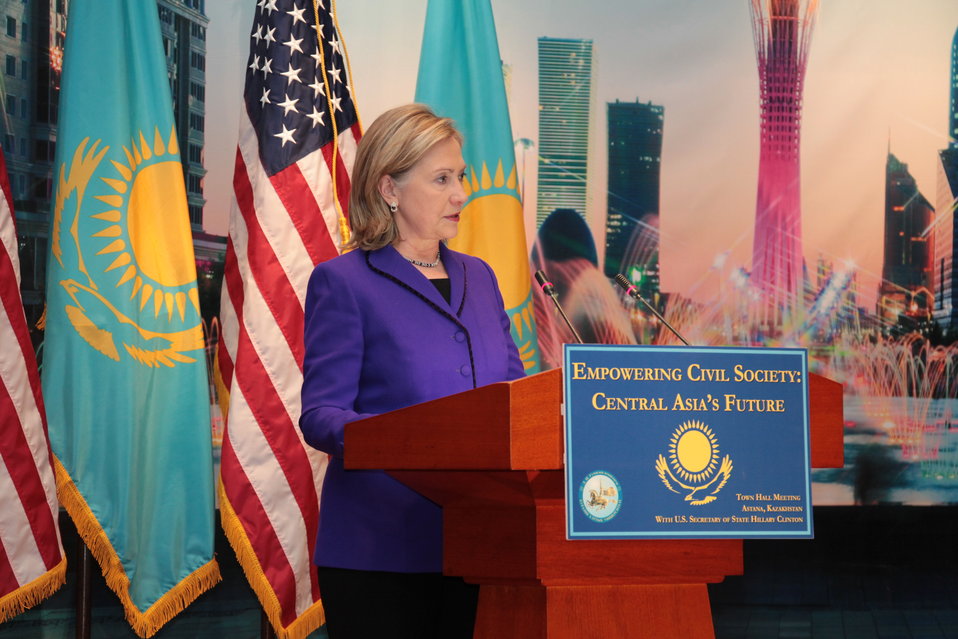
Secretary Clinton Responds to a Question

U.S. Secretary of State Hillary Rodham Clinton responds to a question at a town hall on “Empowering Civil Society for Central Asia’s Future” in Astana, Kazakhstan, on November 30, 2010.